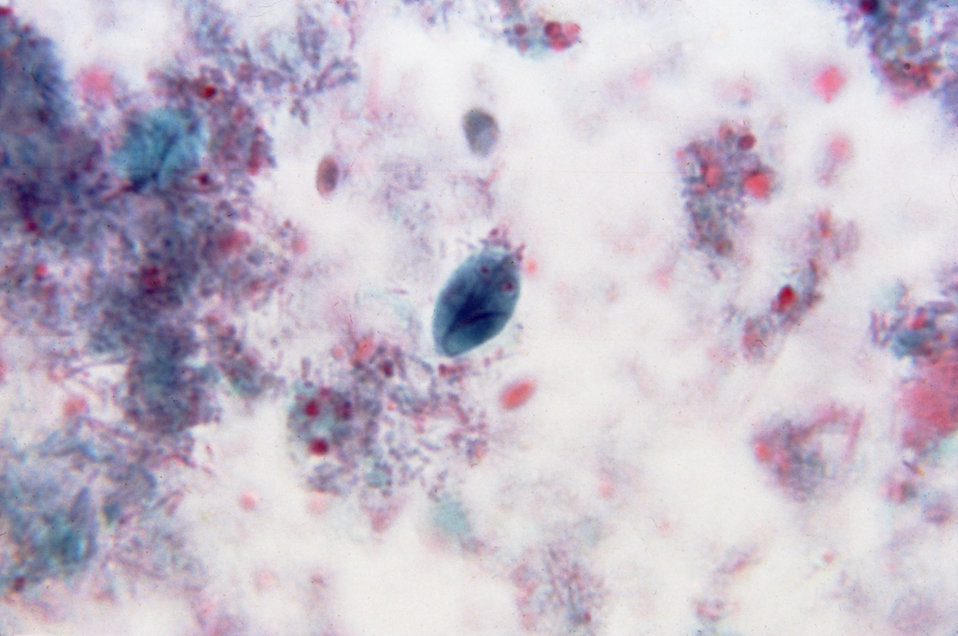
This photomicrograph reveals a Giardia lamblia cyst using a trichrome stain.